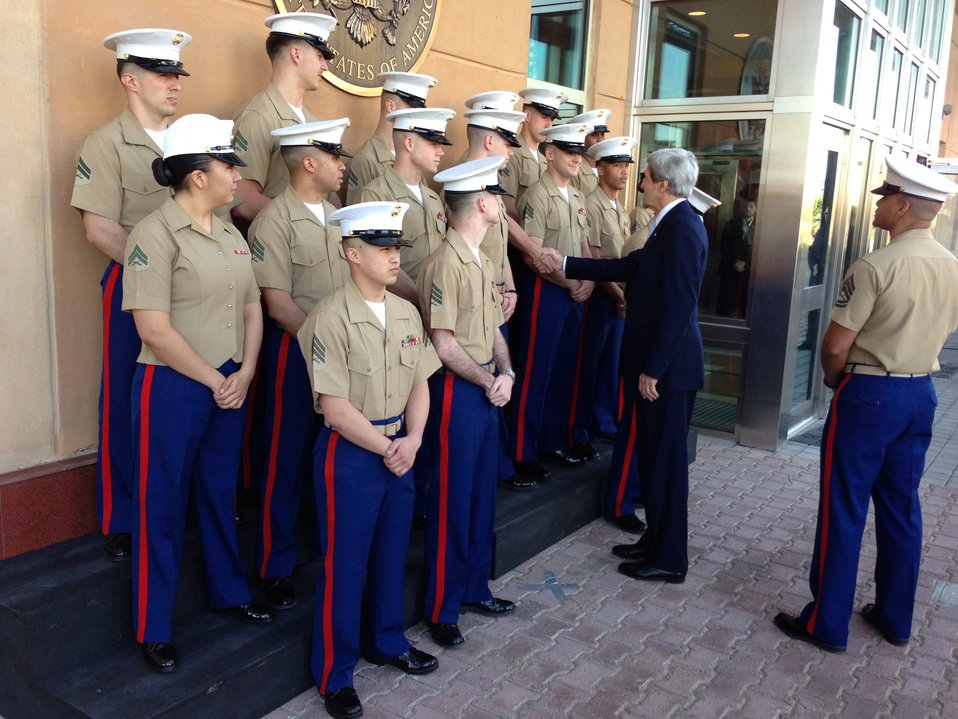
Secretary Kerry Greets U.S. Embassy Baghdad Marine Corps Detachment

U.S. Secretary of State John Kerry greets the Marine Security Guard detachment of U.S. Embassy in Baghdad, Iraq on March 24, 2013.